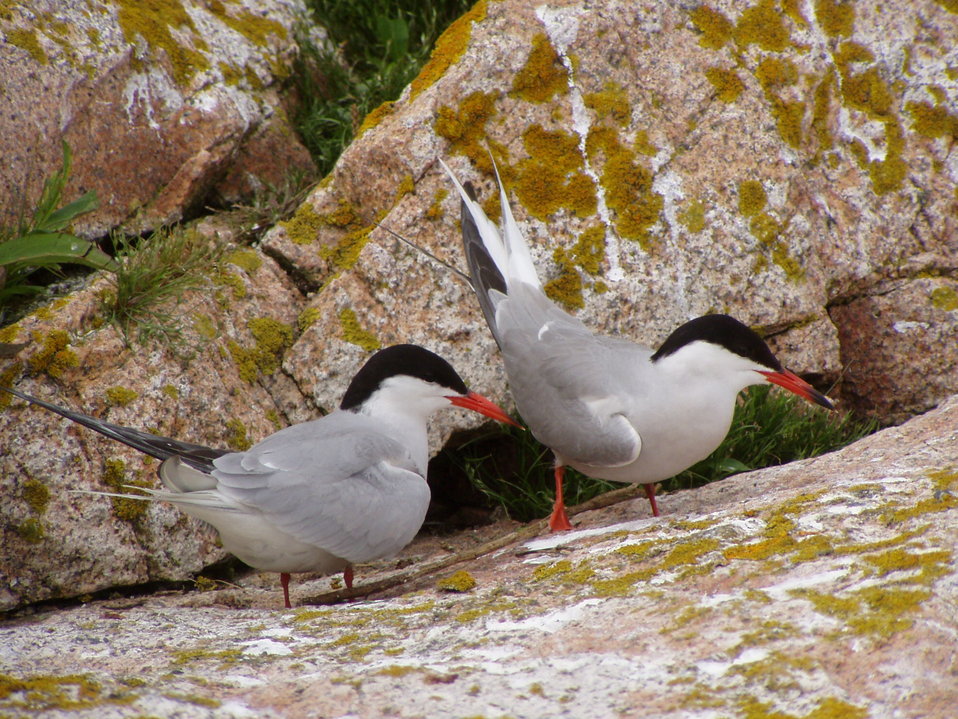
Common terns at Maine Coastal Islands National Wildlife Refuge